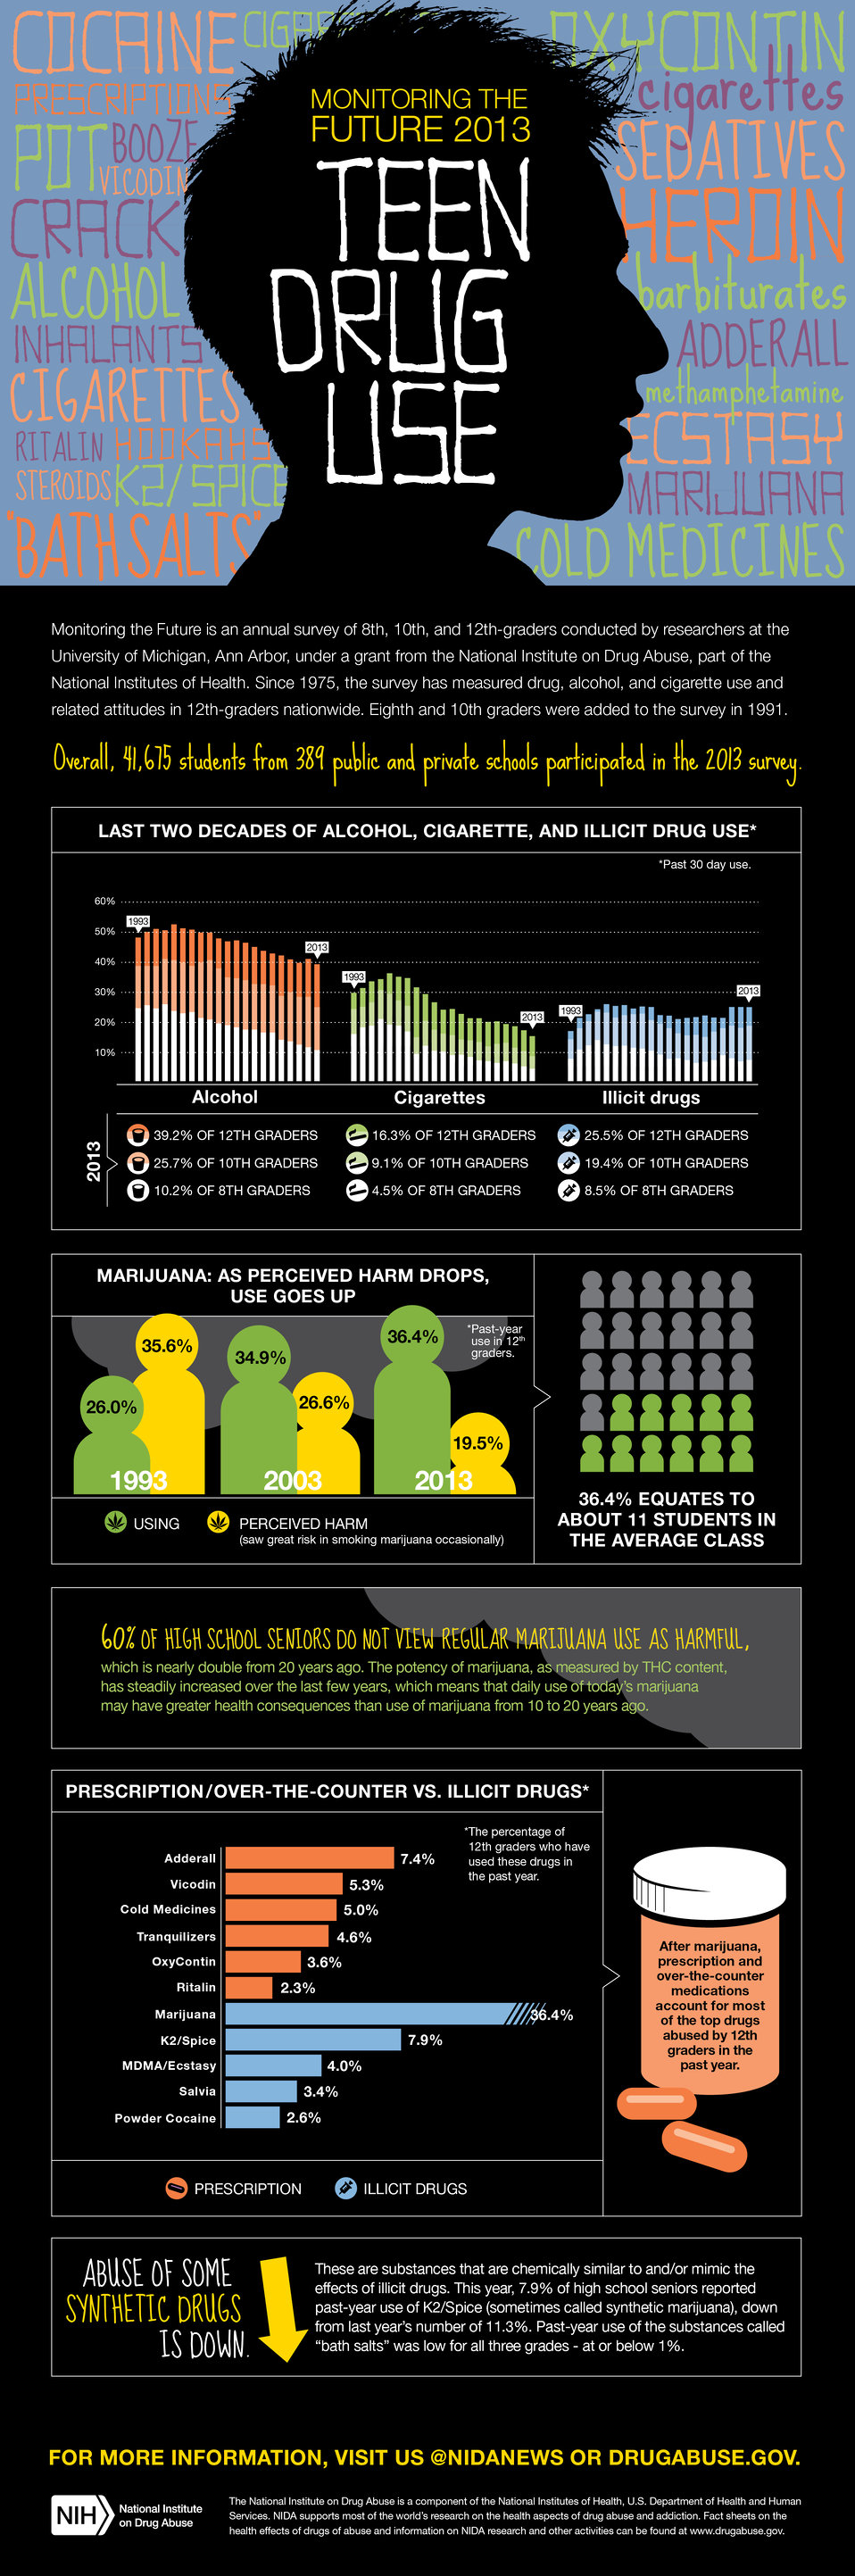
NIDA MTF2013 Infographic F

Text Description of Infographic

Top figure: Monitoring the Future is an annual survey of 8th, 10th, and 12th-graders conducted by researchers at the University of Michigan, Ann Arbor, under a grant from the National Institute on Drug Abuse, part of the National Institutes of Health. Since 1975, the survey has measured drug, alcohol, and cigarette use and related attitudes in 12th-graders nationwide. Eighth and 10th graders were added to the survey in 1991. Overall, 41,675 students from 389 public and private schools participated in the 2013 survey.

Second figure: Last Two Decades of Alcohol, Cigarette, and Illicit Drug Use*
*Past 30 day use.
This graphic illustrates past 30 day alcohol, cigarette, and illicit drug use among 8th, 10th, and 12th graders from 1993 through 2013. In general, alcohol and cigarette use has decreased, and illicit drug use, which declined in the late 1990s and early 2000s, has been increasing in recent years. In 2013, past 30 day use in each category was:

Alcohol

12th graders: 39.2%
10th graders: 25.7%
8th graders: 10.2%

Cigarettes

12th graders: 16.3%
10th graders: 9.1%
8th graders: 4.5%

Illicit Drugs

12th graders: 25.5%
10th graders: 19.4%
8th graders: 8.5%

Third figure (left): Marijuana: As Perceived Harm Drops, Use Goes Up
* Past-year use in 12th graders.

Three points in time are shown—1993, 2003, 2013— for marijuana use and the perception of risk (saw great risk in smoking marijuana occasionally) among 12th graders.

1993

Using: 26.0%
Perception of risk: 72.5% saw great risk in smoking marijuana occasionally

2003

Using: 34.9
Perception of risk: 54.9% saw great risk in smoking marijuana occasionally

2013

Using: 36.4%
Perception of risk: 39.5% saw great risk in smoking marijuana occasionally

Third figure (right):
36.4% equates to about 11 students in the average class.

Fourth figure:
60% of high school seniors do not view regular marijuana use as harmful, which is nearly double from 20 years ago. The potency of marijuana, as measured by THC content, has steadily increased over the last few years, which means that daily use of today’s marijuana may have greater health consequences than use of marijuana from 10 to 20 years ago.

Fifth figure: Prescription/Over-the-Counter vs. Illicit Drugs
After marijuana, prescription and over-the-counter medications account for most of the top drugs abused by 12th graders in the past year.

This list shows the percentage of 12th graders who have used the following drugs in the past year.

Prescription
Adderall – 7.4%
Vicodin – 5.3%
Cold medicines - 5.0%
Tranquilizers – 4.6%
OxyContin – 3.6%
Ritalin - 2.3%

Illicit Drugs
Marijuana – 36.4%
K2/Spice: 7.9%
MDMA/Ecstasy: 4.0%
Salvia: 3.4%
Powder cocaine: 2.6%

Bottom figure: Abuse of Some Synthetic Drugs is Down.

These are substances that are chemically similar to and/or mimic the effects of illicit drugs. This year, 7.9% of high school seniors reported past-year use of K2/Spice (sometimes called synthetic marijuana), down from last year’s number of 11.3%. Past-year use of the substances called “bath salts” was low for all three grades - at or below 1%.

For more information, visit us @NIDAnews or DrugAbuse.gov.

The National Institute on Drug Abuse is a component of the National Institutes of Health, U.S. Department of Health and Human Services. NIDA supports most of the world’s research on the health aspects of drug abuse and addiction. Fact sheets on the health effects of drugs of abuse and information on NIDA research and other activities can be found at www.drugabuse.gov.